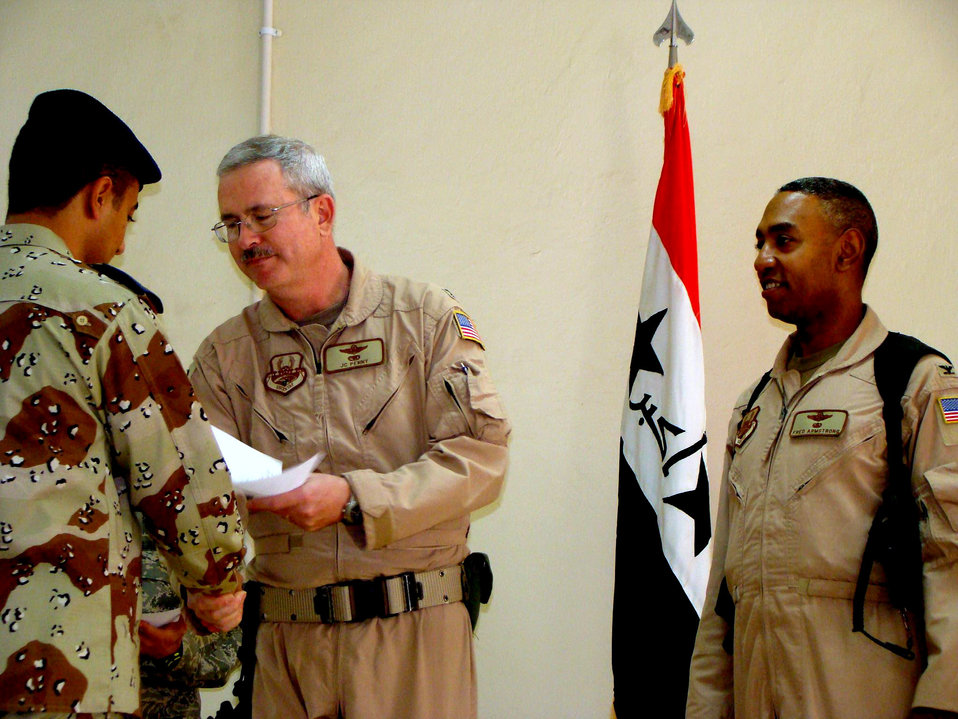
Iraqi Air Force Training School graduates firefighters, officers

Col. David Penny (center) and Col. Merrill Armstrong (right) present a graduation certificate to a new Iraqi air force officer Dec. 10 at the Iraqi Air Force Training School at Taji Air Base, Iraq. Colonel Penny is the 370th Air Expeditionary Advisory Group commander, and Colonel Armstrong is the 370th AEAG vice commander.